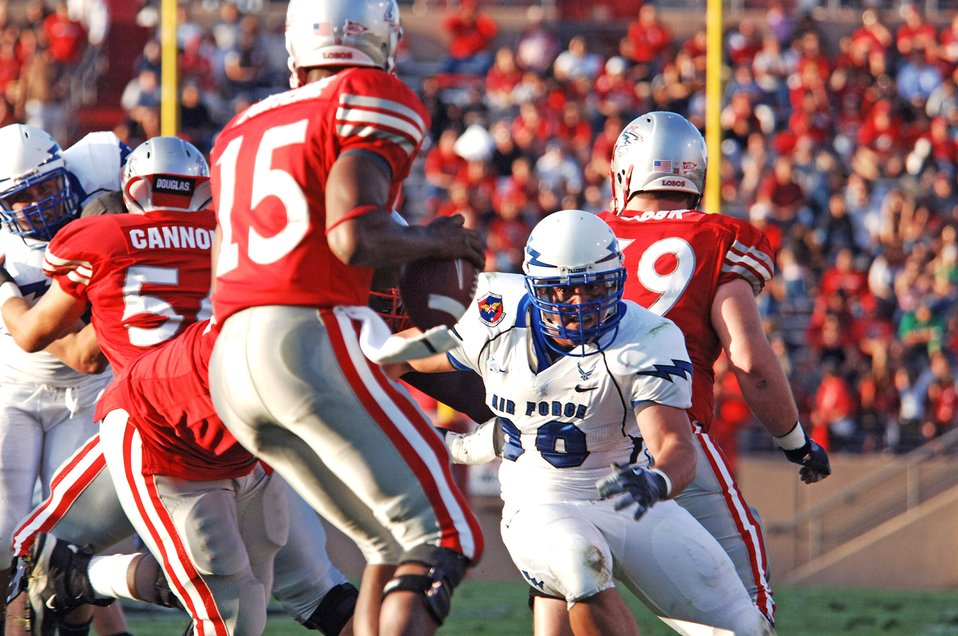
I'm coming for YOU...

U.S. Air Force Academy defensive end Ryan Ricketts pressures New Mexico quarterback Donovan Porterie during football action Sept. 19, 2009, at Albuquerque, N.M. The Falcons won 37-13.